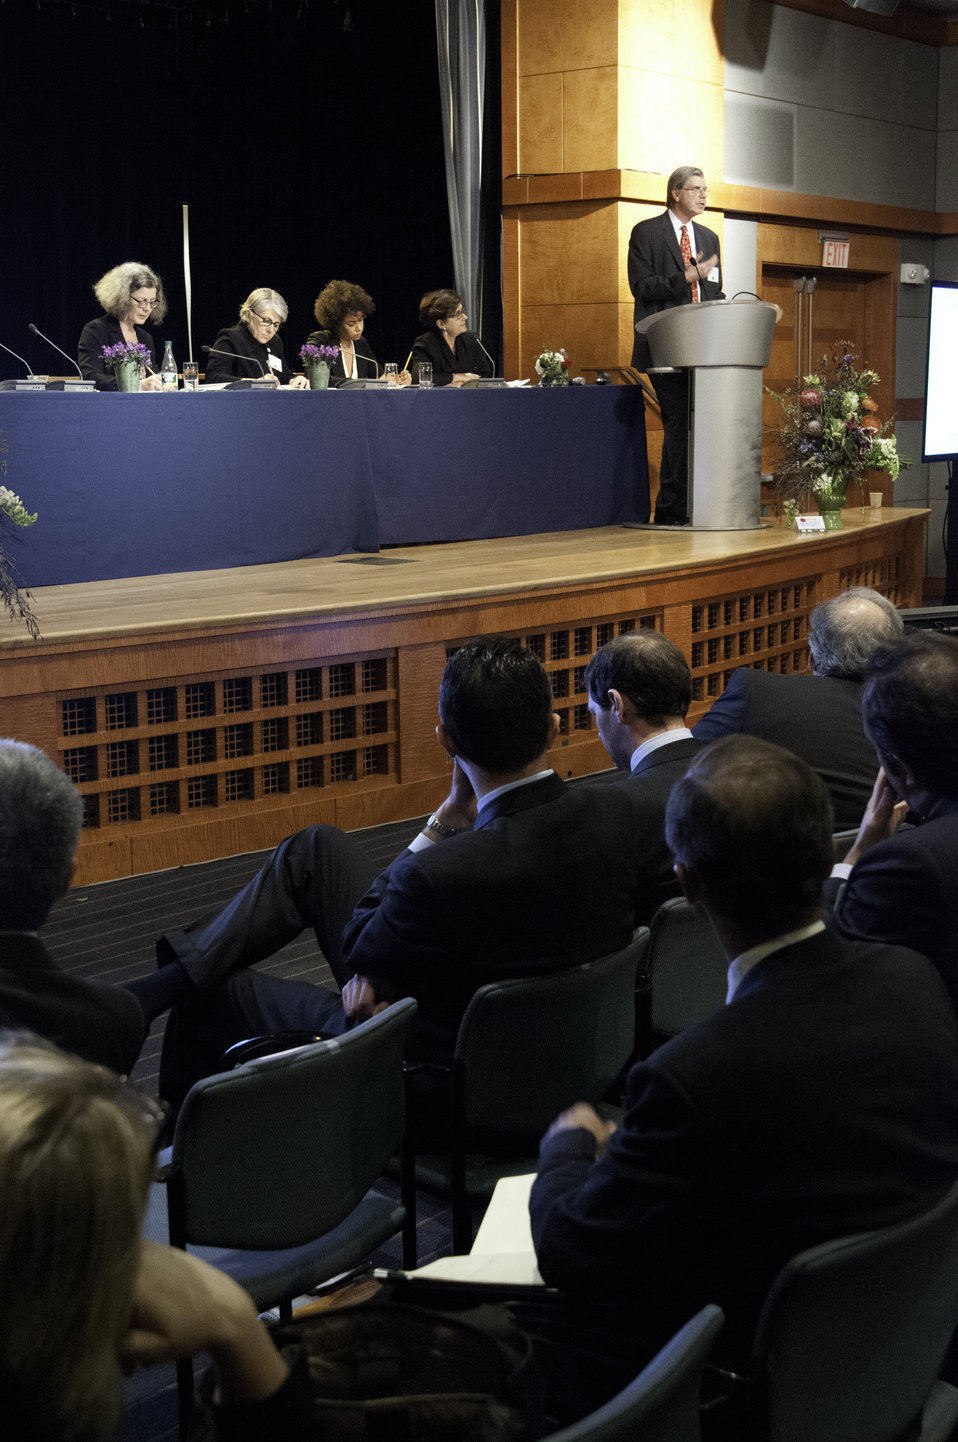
Agriculture Chief Economist Dr. Joseph Glauber speaks at the G-8 International Conference on Open Data for Agriculture in Washington, D.C. on Apr. 29, 2013. Glauber spoke at the breakout session on “How Recent G-8/G-20 Research Initiatives can Contribute to the Open Data for Agriculture System”. (Seated L to R The Wheat Initiative International Scientific Coordinator Helene Lucas, Earth Observations Intergovernmental Group Secretariat Director Barbara Ryan, On behalf of NEPAD CEO Ibrahim Mayaki Sarah Lawan, and France Agriculture Chief Scientist Marion Guillou).